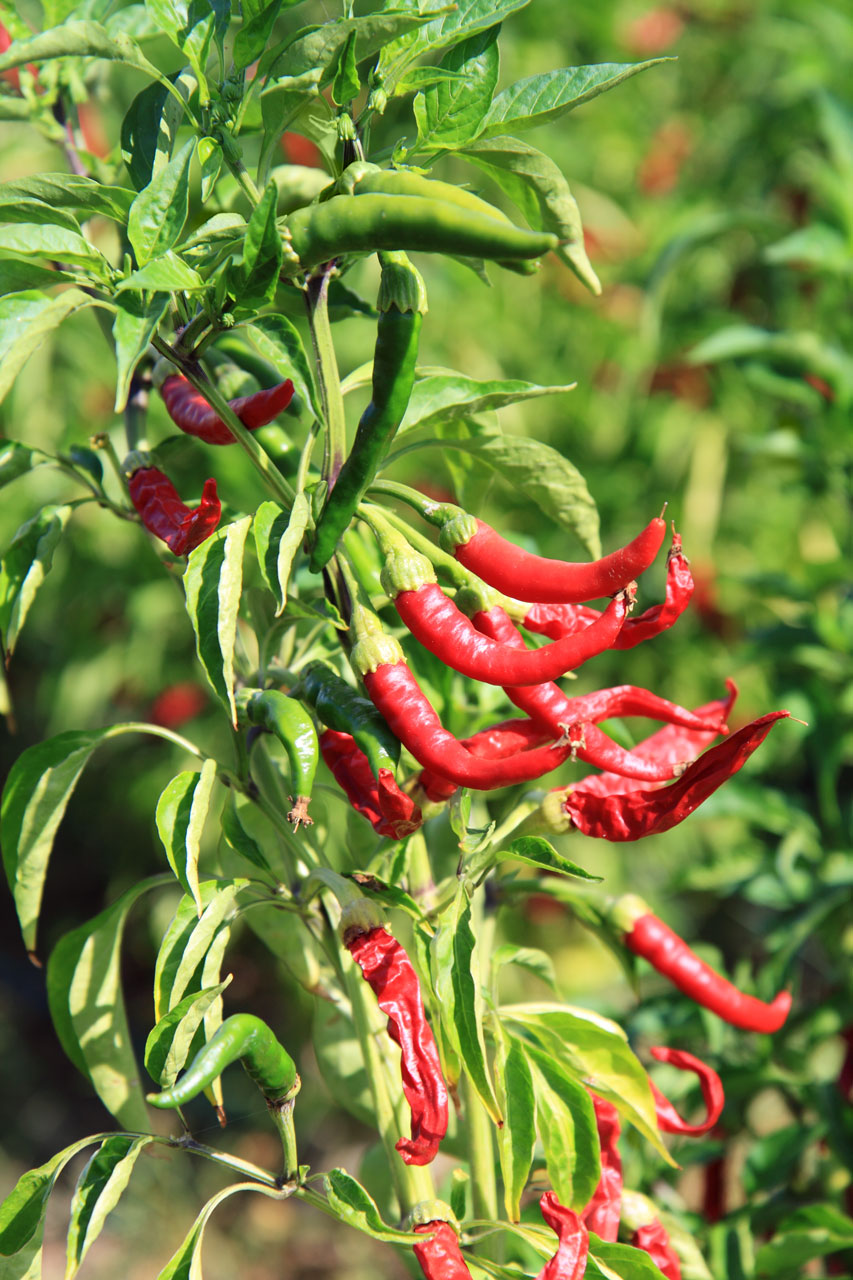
Chili peppers

Growing chili peppers.